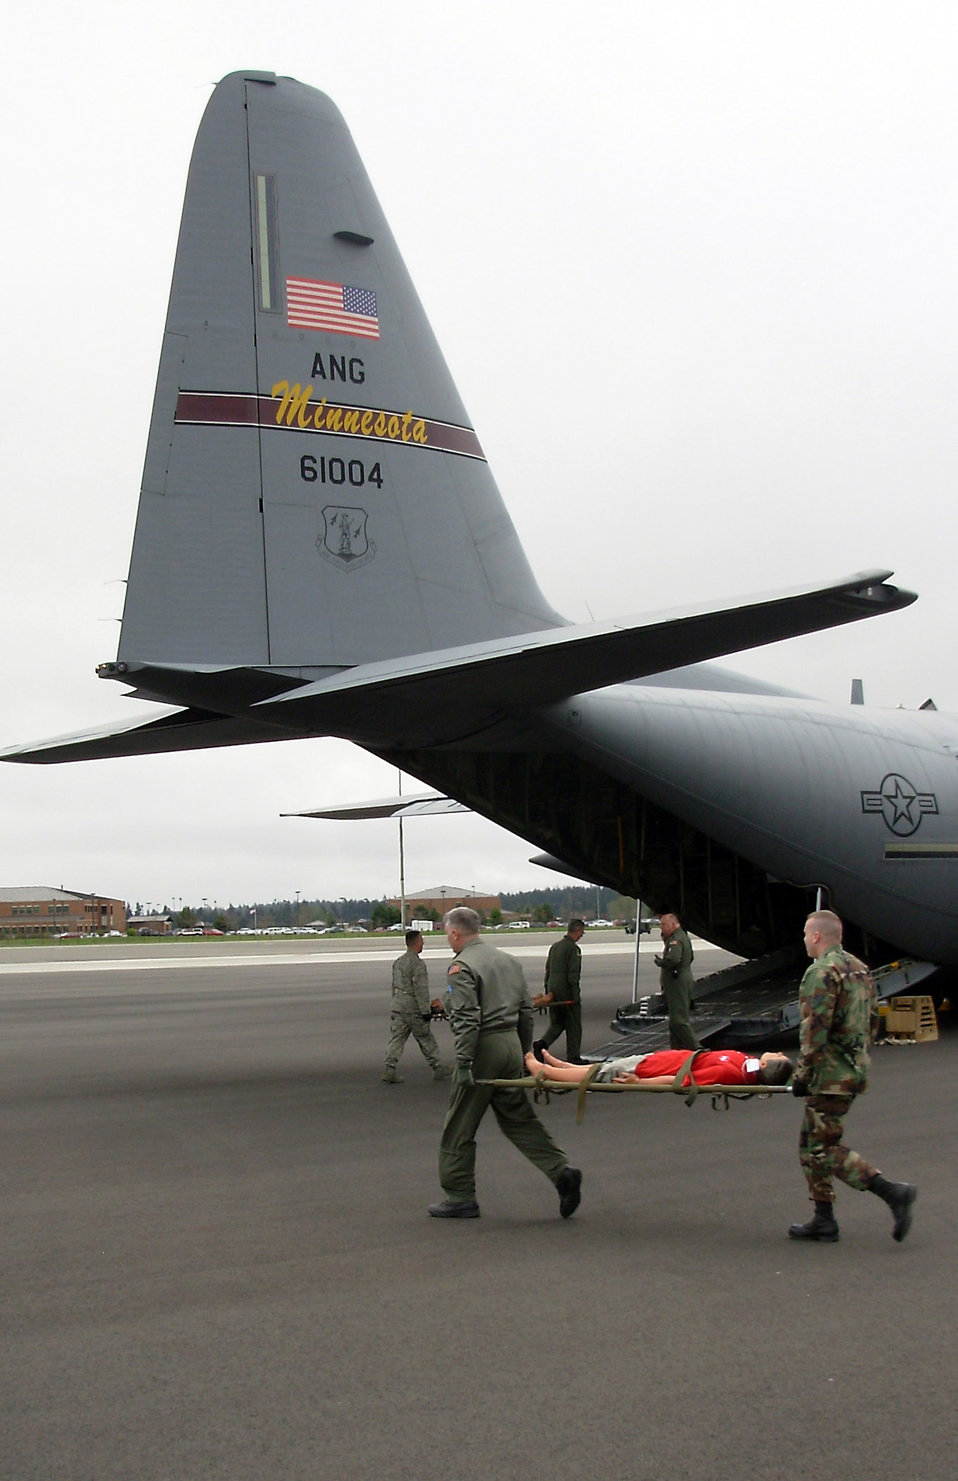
Airmen participate in Exercise Ultimate Caduceus 08

A medical team rushes simulated casualties onto a C-130 Hercules at McChord Air Force Base, Wash., as part of Ultimate Caduceus 08, the U.S. Transportation Command's participation in National Level Exercise 02-08. The exercise combined Department of Defense, Washington state and local authorities in a simulated mass casualty exercise in the Seattle, Wash., area.